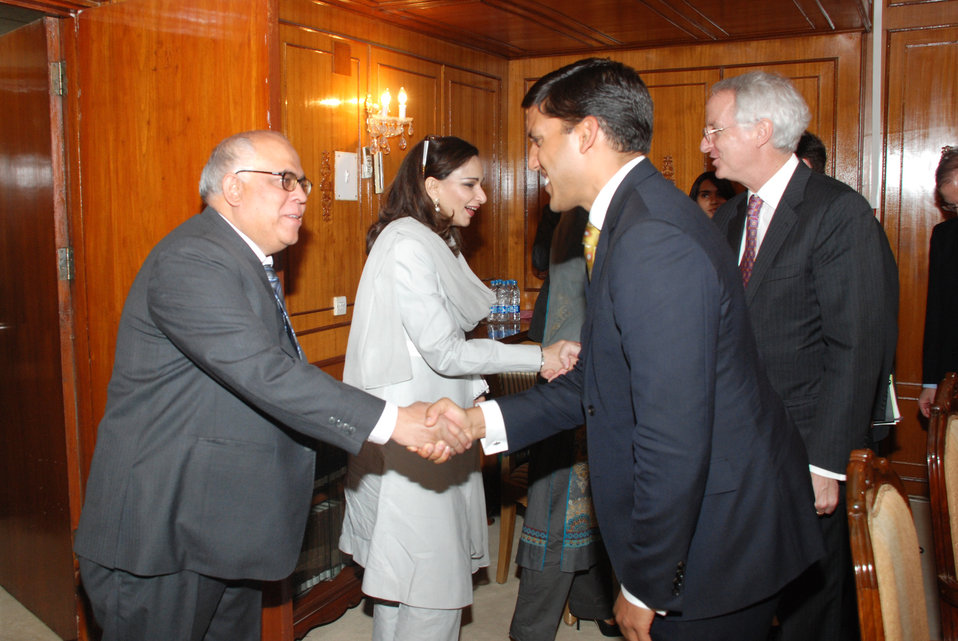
US officials Meeting with Minister of Foreign Affairs, Assistance to Pakistan Remains Strong at Islamabad on April 14, 2012